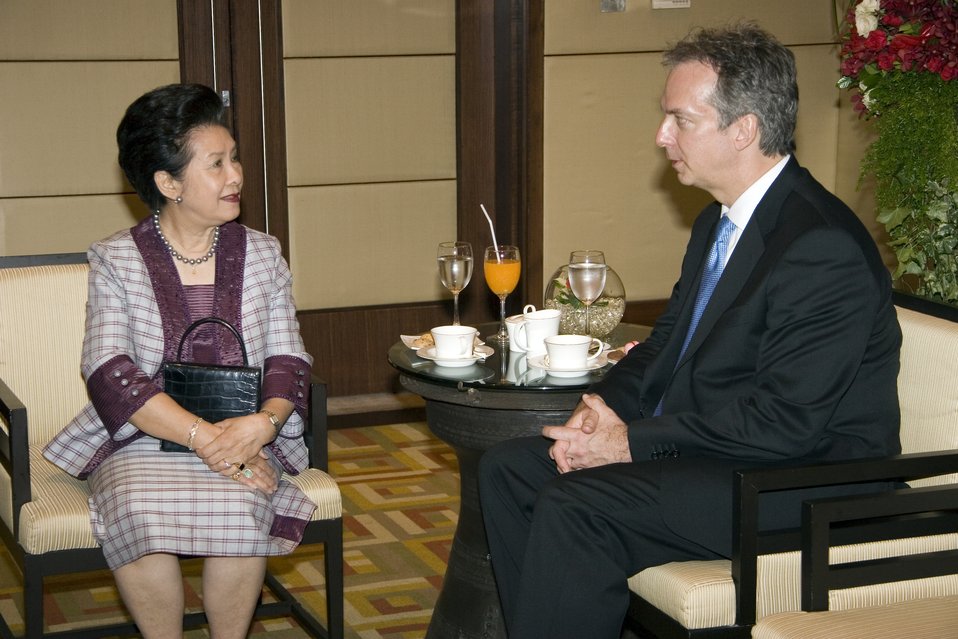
U.S. Ambassador to Thailand Meets With Thai Queen’s Lady-in-Waiting

U.S. Ambassador to Thailand Eric G. John meets with the Queen’s Lady-in-Waiting, Thanpuying Nravadi Chaixanien, at the Conrad Hotel in Bangkok, Thailand July 21, 2009.